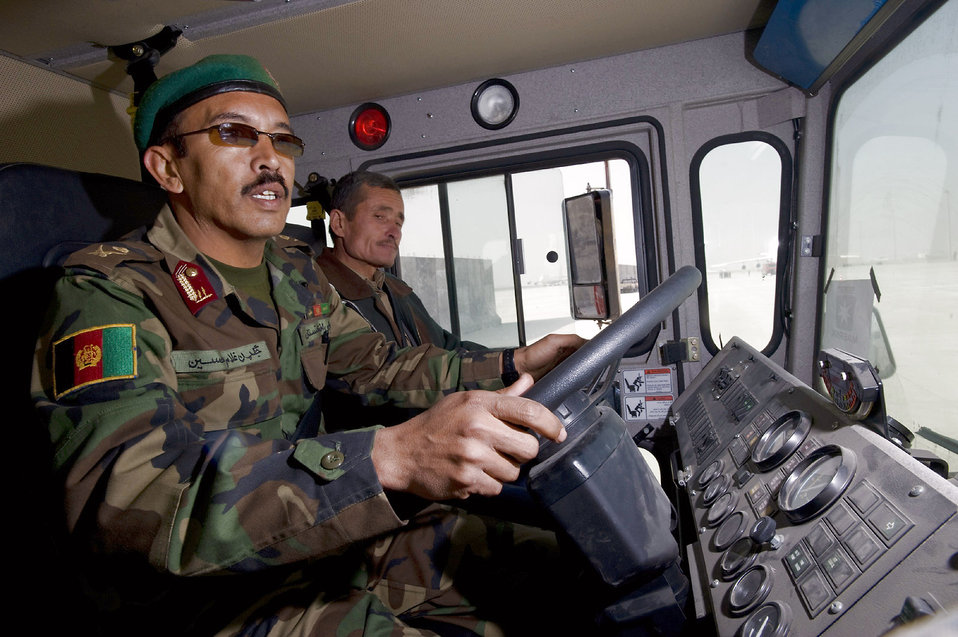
Operation Enduring Freedom

An Afghan National Army Air Corps firefighter drives a fire truck through an obstacle course during a driver training class at the Kabul International Airport, Afghanistan. The ANAAC received seven of the fire trucks, which will be distributed to several bases around Afghanistan.